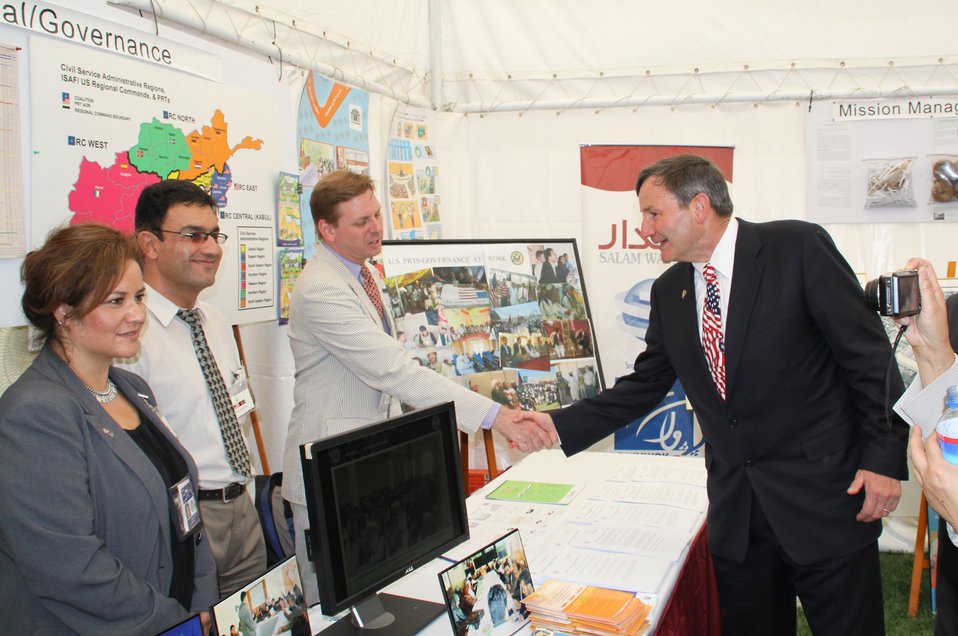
Kabul Official July 4th Celebration